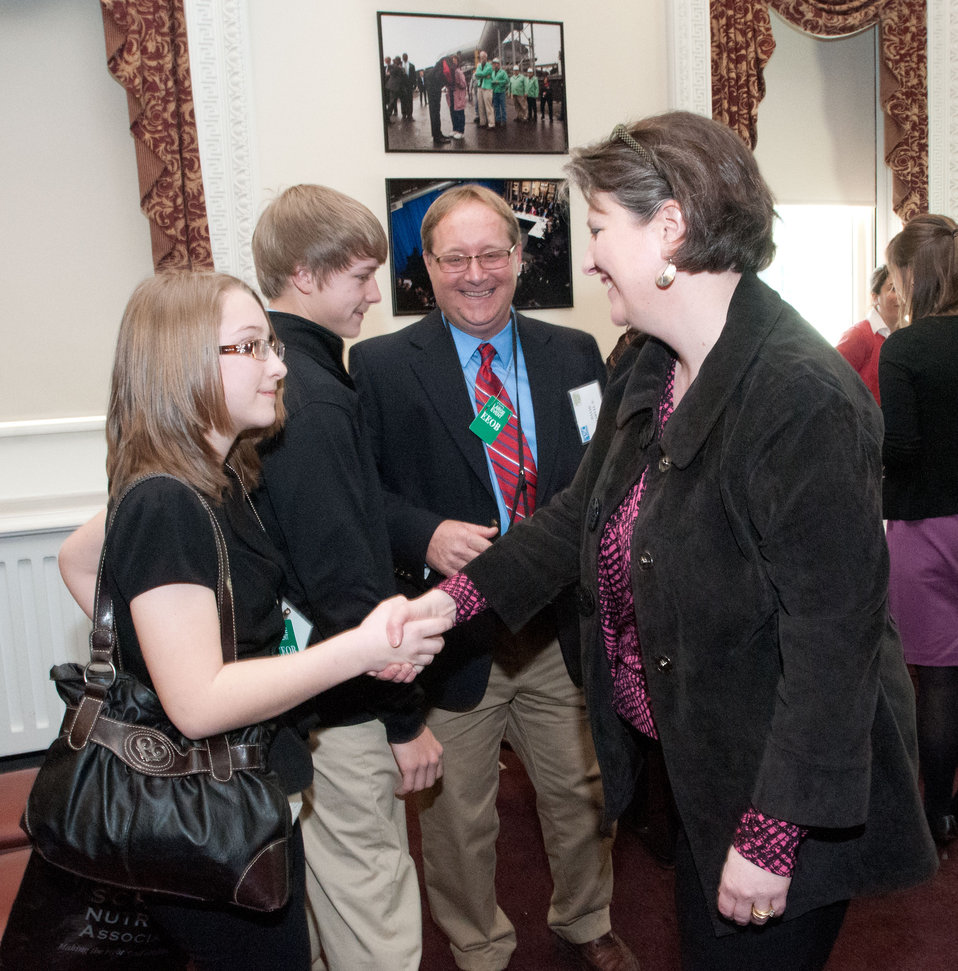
Agriculture Deputy Secretary Kathleen Merrigan (right) talks with National Farm To School Network Executive Board Member David W. Marvel, Jr. (second from right), son David Marvel, III. (second from left), and daughter Bethany Marvel (left), from West Virginia. They were at the White House, in Washington, D.C., on Monday, March 5, 2012. David W. Marvel, Jr., spoke about the farm to school program in his community and has been active in the Farm to Cafeteria conferences and the National Farm to School efforts. This event held a virtual conversation continuing the National Conversation on Local and Regional Food projects and how they offer economic opportunities to local farmers, ranchers and food entrepreneurs.